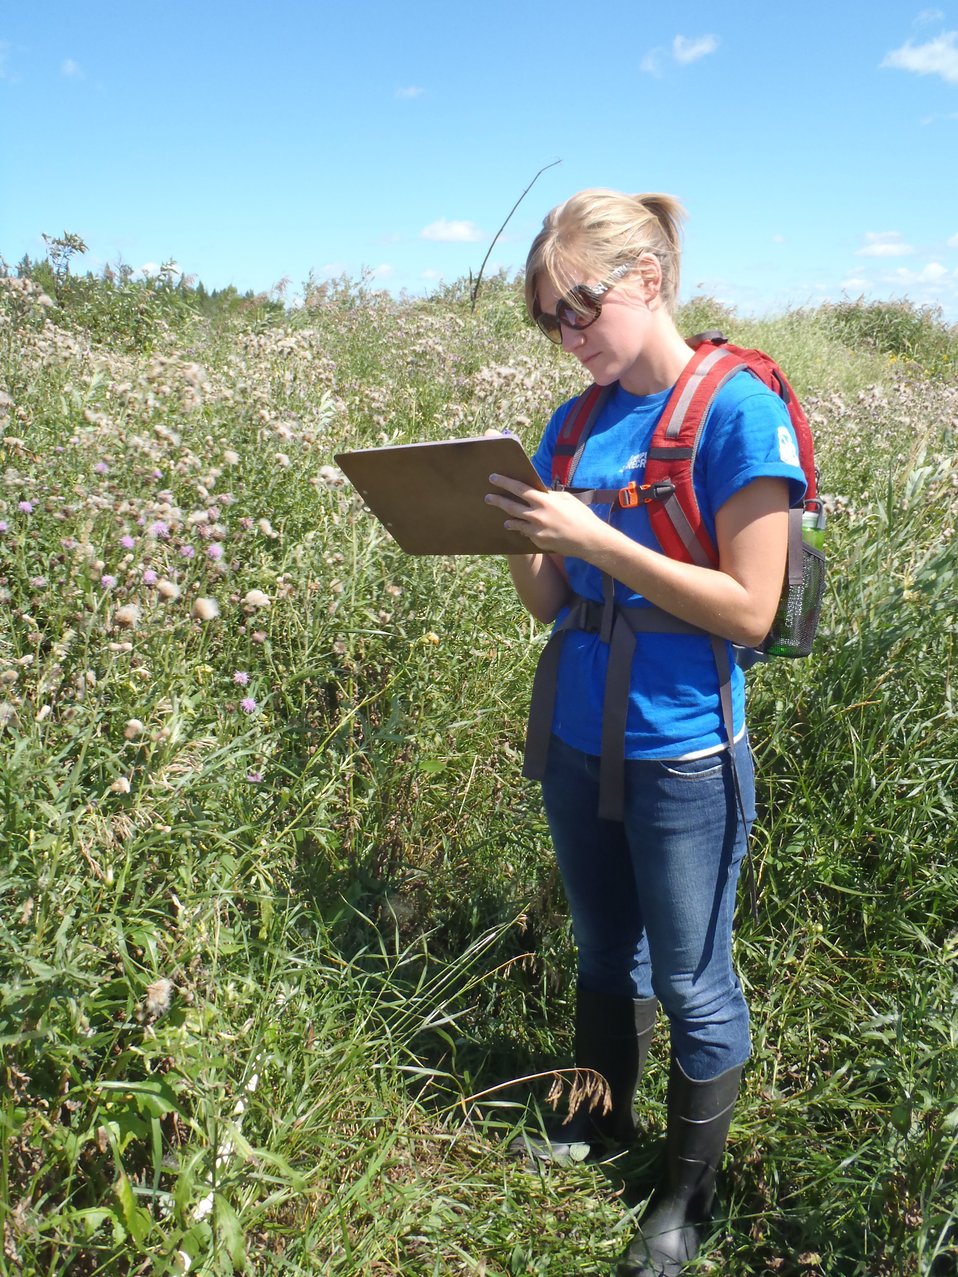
Rachel Carnes

At Agassiz National Wildlife Refuge in Minnesota, FWS Wilderness Fellow Rachel Carnes records the GPS coordinates of locations where Canada thistle beetles were released. The beetles were being deployed as biological control agents against Canada thistle, a highly aggressive, non-native invasive species.